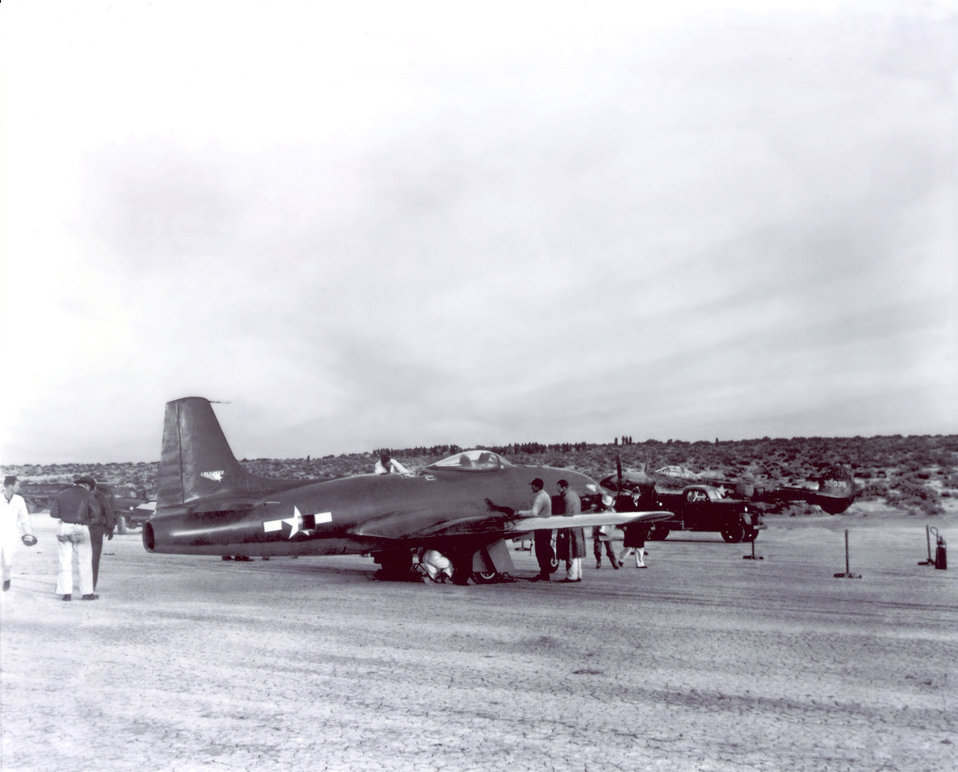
Lockheed XP-80

The Lockheed XP-80 made its first flight on Jan. 8, 1944. In 1948, the Air Force changed the